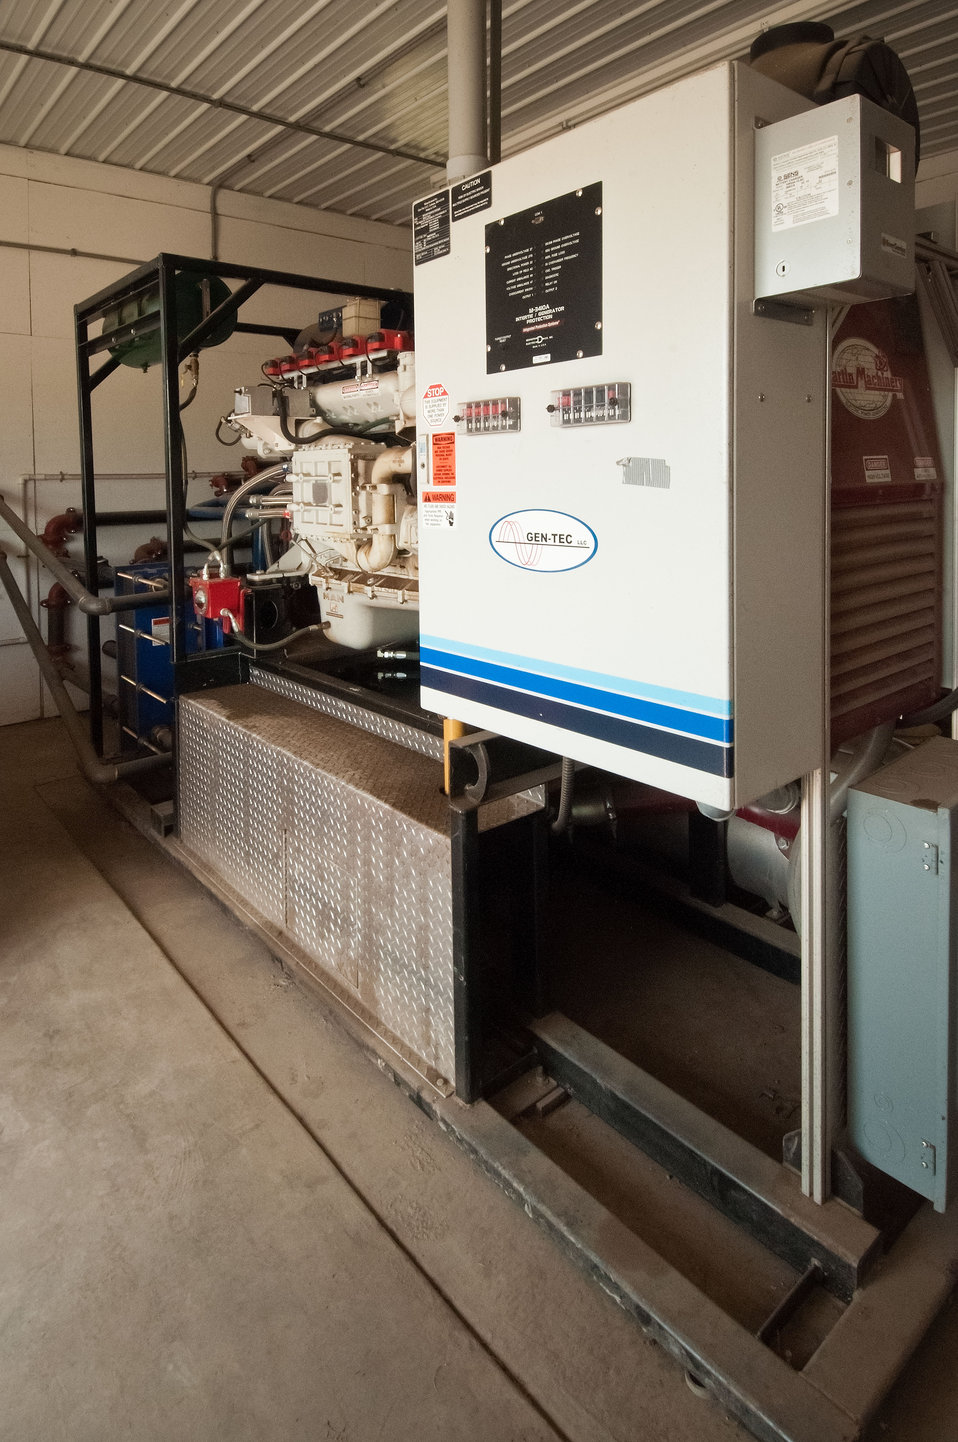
The engine that produces the electricity for Pennwood Dairy Farms owned and operated by the Stoltzfus family in Berlin, PA. The dairy uses an anaerobic digester to produce energy for the dairy. The digester produces one million kilowatt hours; half of the energy needs of the farm, the other five hundred thousand kilowatt hours are sold back to the grid. An anaerobic digester is a component of a waste management system that provides biological treatment in the absence of oxygen. The digester captures biogas for energy production, manages odors, reduces the net effect of greenhouse gas emissions, and reduces pathogens. The anaerobic digester practice is part of a planned conservation management system that manages manure and/or comprehensive nutrient management system. Agriculture Secretary Tom Vilsack visited the dairy on Tuesday, July 17, 2012. During his visit Secretary Vilsack highlighted the U.S. Department of Agriculture's (USDA) energy efficiency programs and announced a new effort to help rural consumers make affordable, energy-efficient improvements to their homes and businesses.